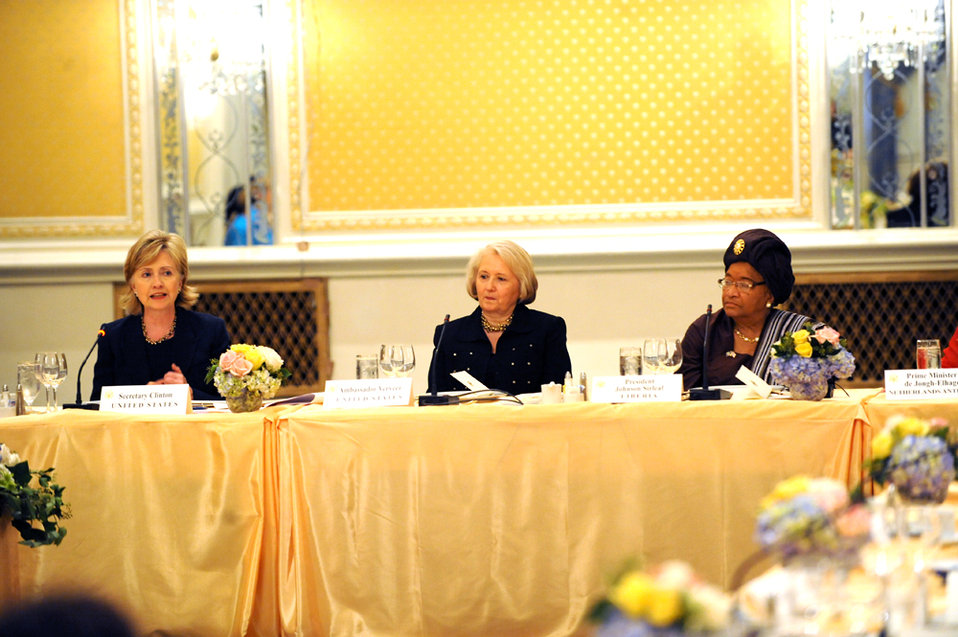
UNGA 2009: Secretary Clinton Holds Women Heads of State and Foreign Ministers Luncheon

U.S. Secretary of State Hillary Rodham Clinton participates in a lunch with women Heads of State and Foreign Minsters at the Waldorf Astoria hotel during the 64th Session of the UN General Assembly in New York City, New York September 24, 2009.